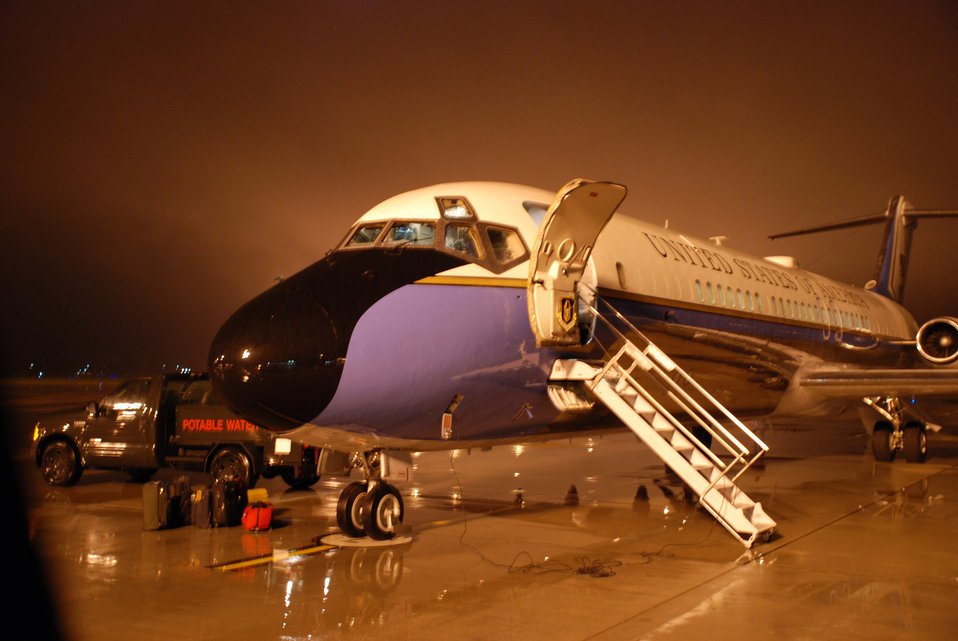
Ready to fly

A C-9C aircraft stands ready in the early morning fog before taking off on a special air mission. The 932nd Airlift Wing, an Air Force Reserve Command unit in Illinois, flies the C-9C and the C-40C at Scott Air Force Base.